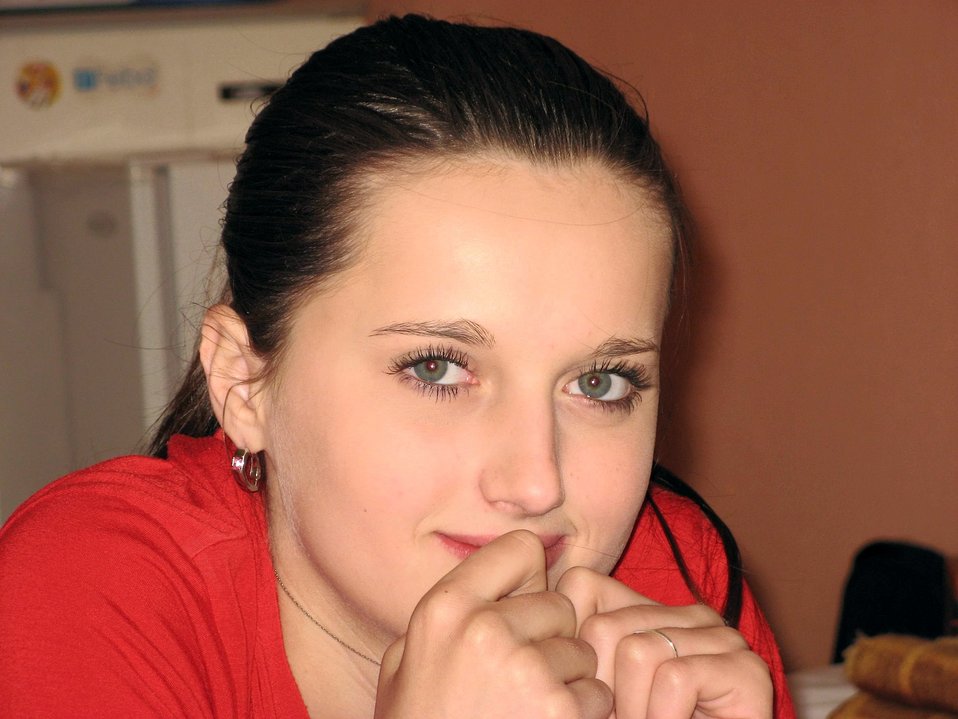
English:
Image title: Pretty girl posing Image from Public domain images website, http://www.public-domain-image.com/full-image/people-public-domain-images-pictures/female-women-public-domain-images-pictures/pretty-girl-posing.jpg.html